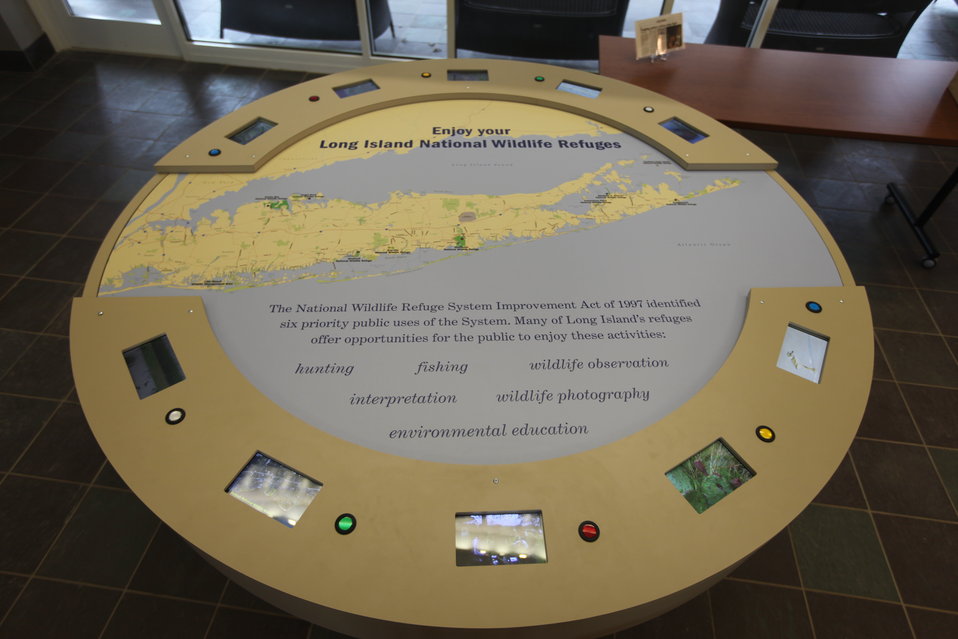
6uses Exhibit

Another exhibit at the Visitor Center describing the six public uses of a National Wildlife Refuge for visitors.